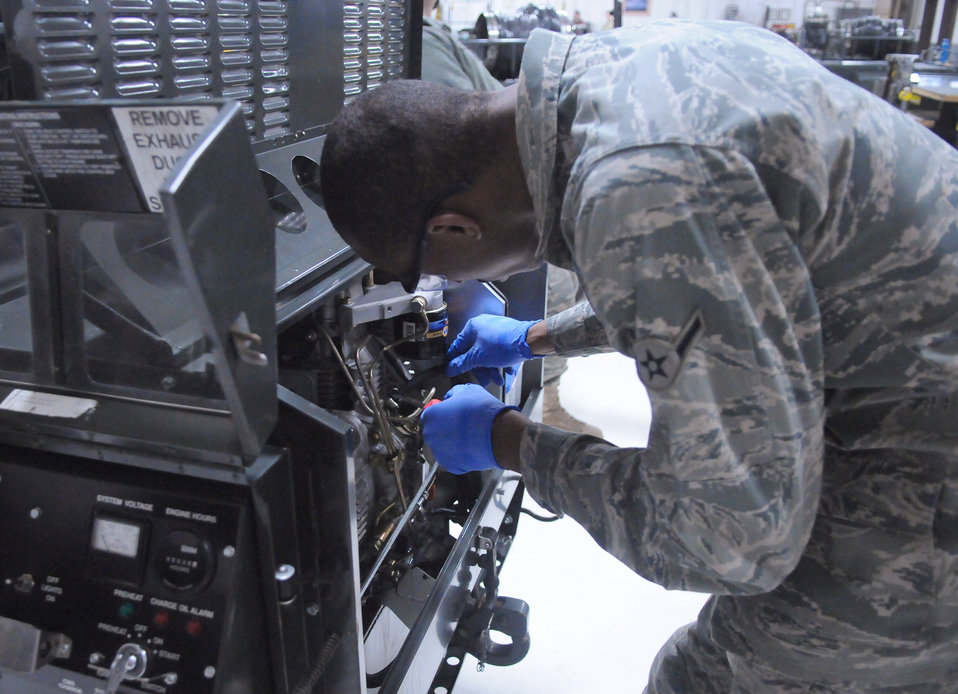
Eielson AFB AGE

Airman John Wilson performs a phase two inspection on a heating system Feb. 16, 2011, at Eielson Air Force Base, Alaska. By changing the filter, removing and priming the fuel system, Airmen can ensure equipment will function properly. Airman Wilson is a 354th Maintenance Squadron aerospace ground equipment maintainer.